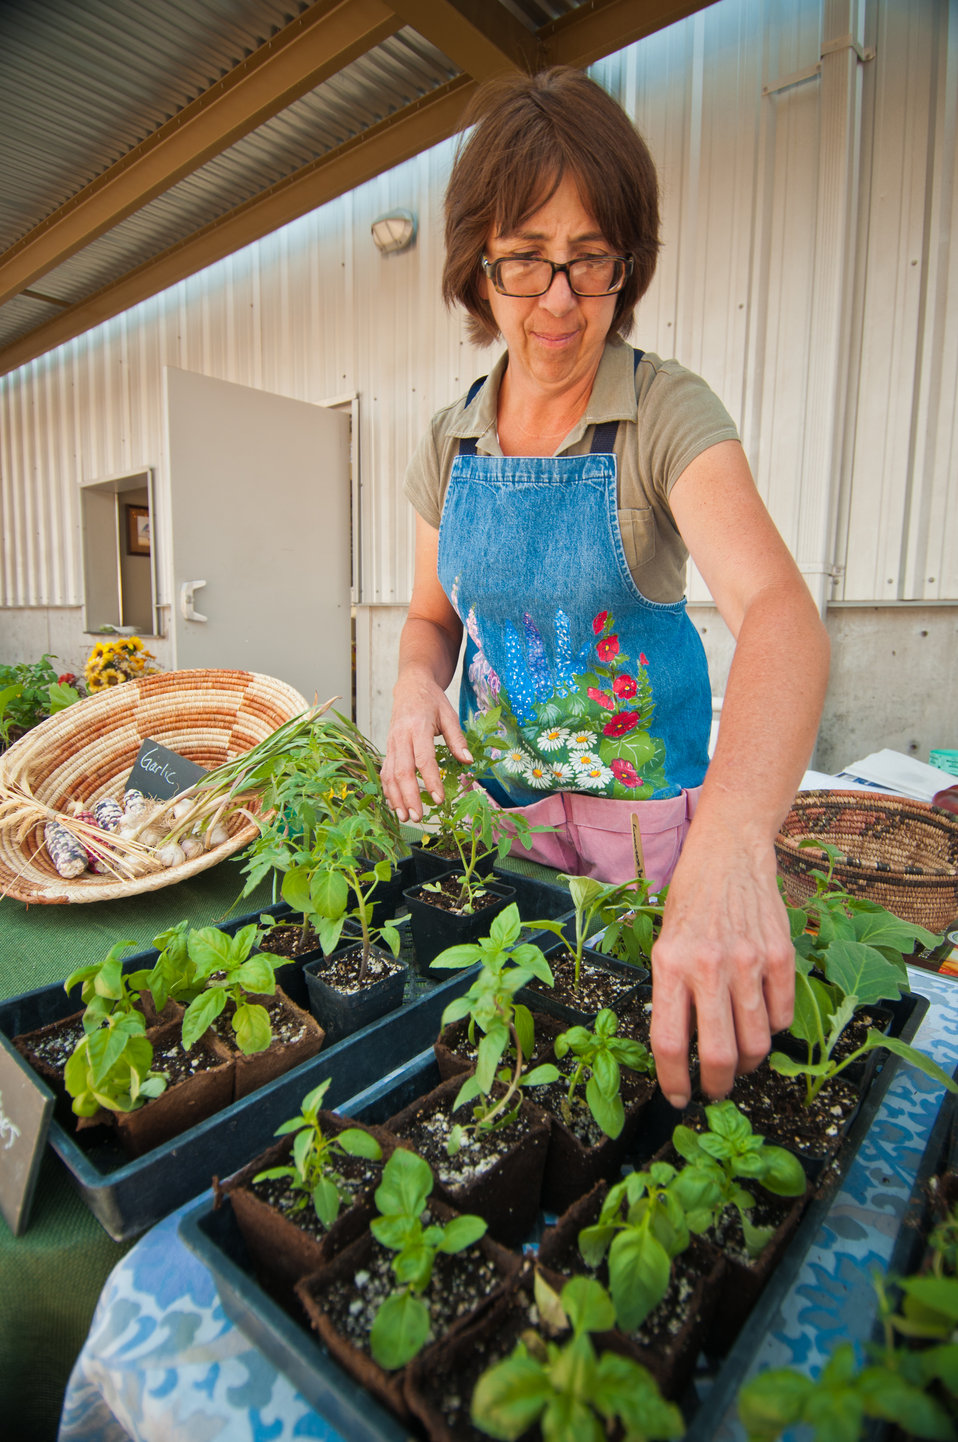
Loretta Sandoval displays basil grown on her farm Zulu's Petals Certified Organic Produce and Nursery near Dixon, NM at the Santa Fe Farmers Market in Santa Fe, NM on Tuesday, Jun. 11, 2013. Zulu’s Petals produce landraces, peppers, grains, and heirloom crops are grown primarily for farmers markets. The farm’s main goal is reintroduction of traditional, high nutrient-dense food to farm customers, encouraging seed saving, and helping people learn to grow their own gardens. The Santa Fe Farmers Market is one of the oldest, largest and most successful growers’ markets in the country. Serving farmers and producers the market brings fresh food; education promotes small farms and sustainable agriculture in Northern New Mexico.